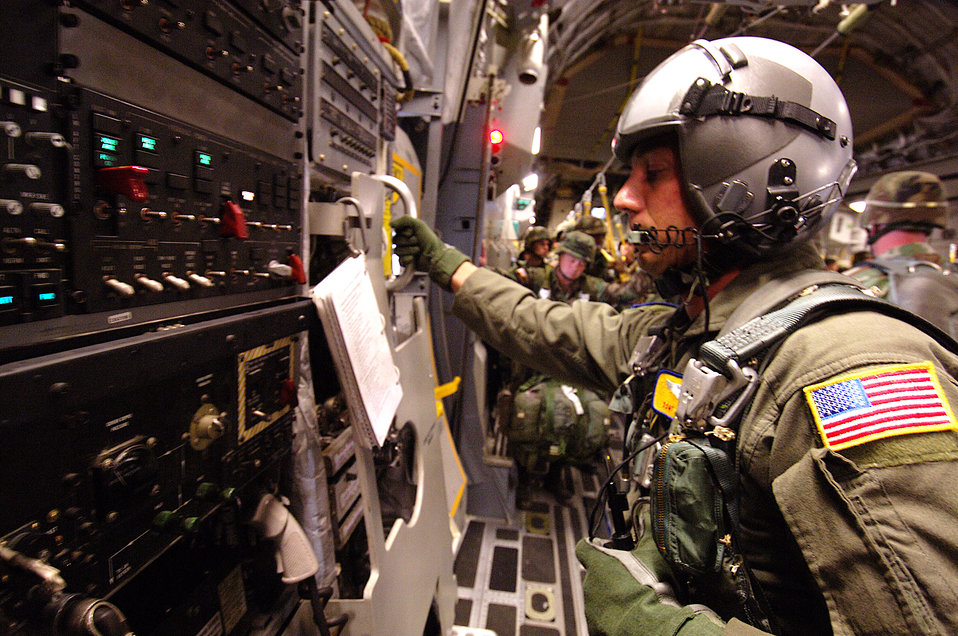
Dropped

POPE AIR FORCE BASE, N.C. -- Staff Sgt. James Hader Jr., conducts final checks before opening the troop door for Soldiers from Fort Bragg, N.C., during a personnel drop mission here, July 11. Sergeant Hader is from Charleston Air Force Base, S.C.